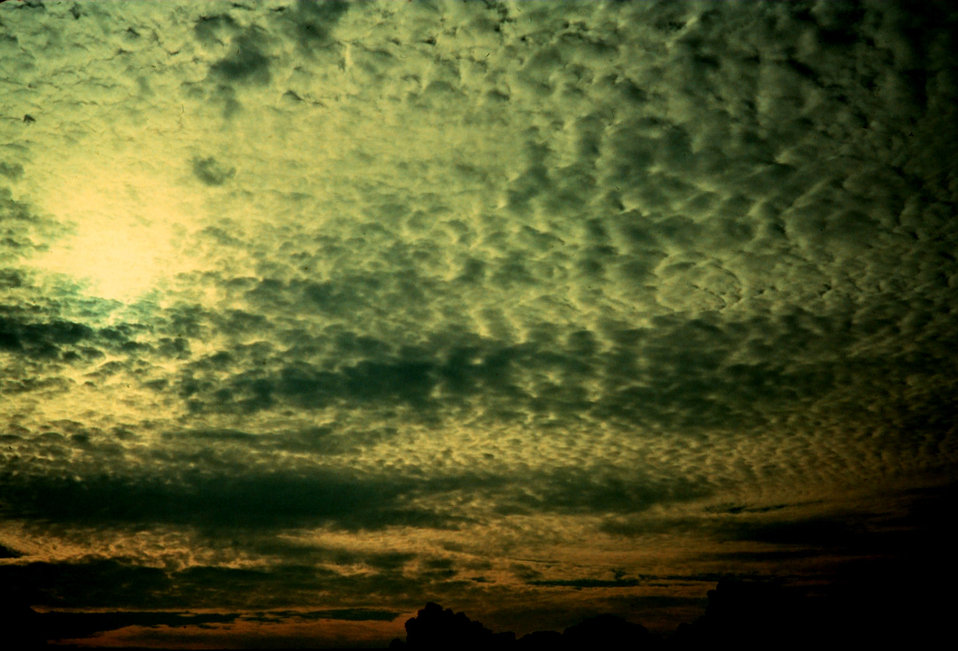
Altocumulus clouds